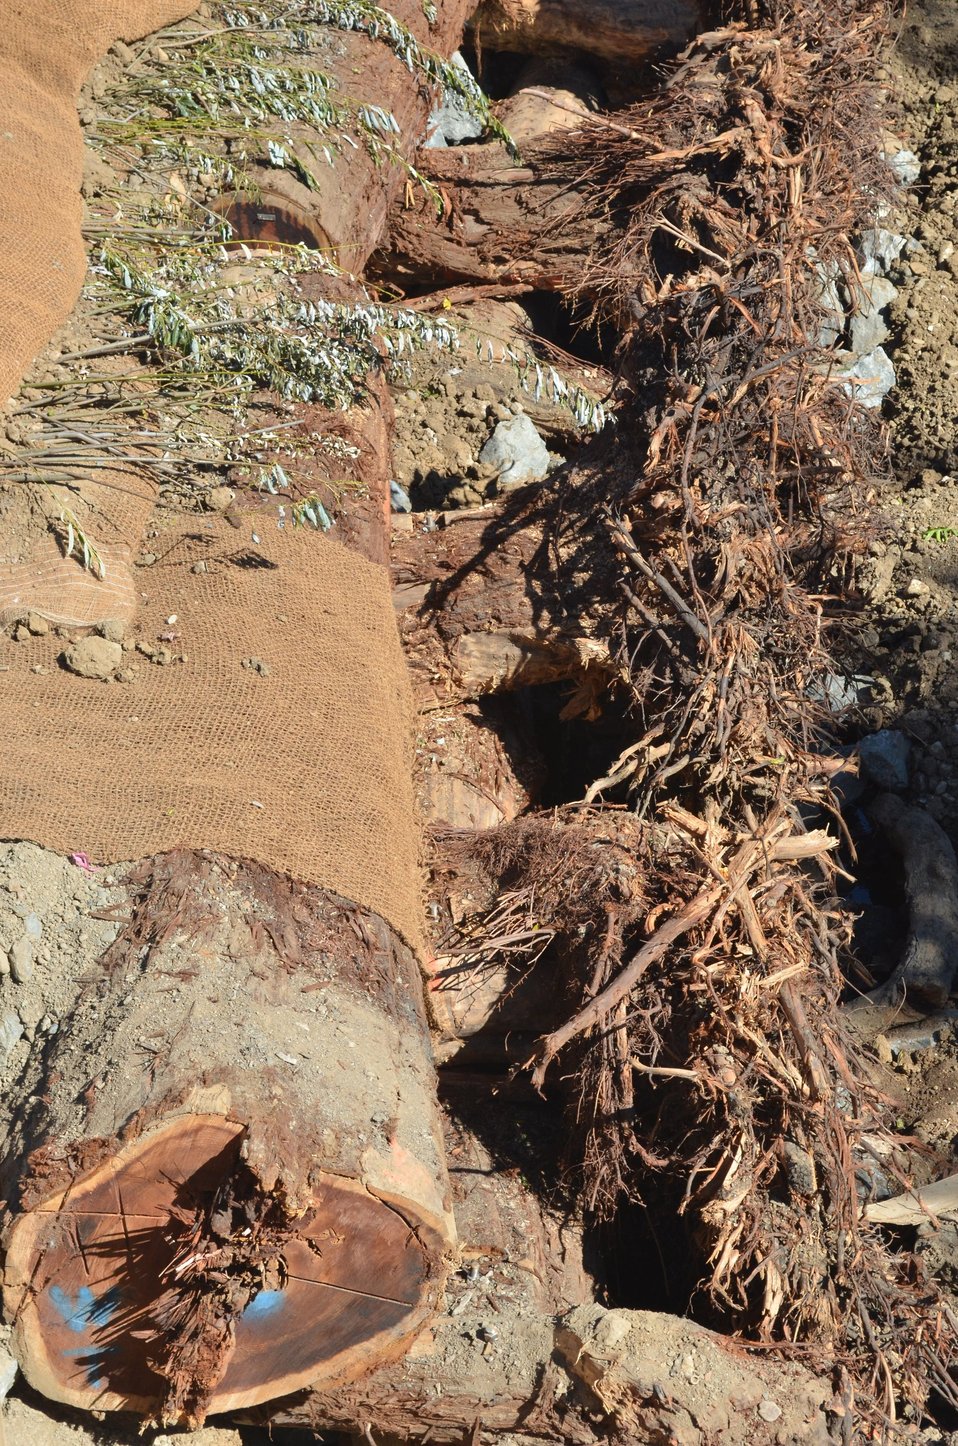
Napa flood risk reduction efforts

Large woody debris used in construction of the Napa River Creek to allow for fish friendly erosion control. (US Army Corps of Engineers/DeDe Cordell)